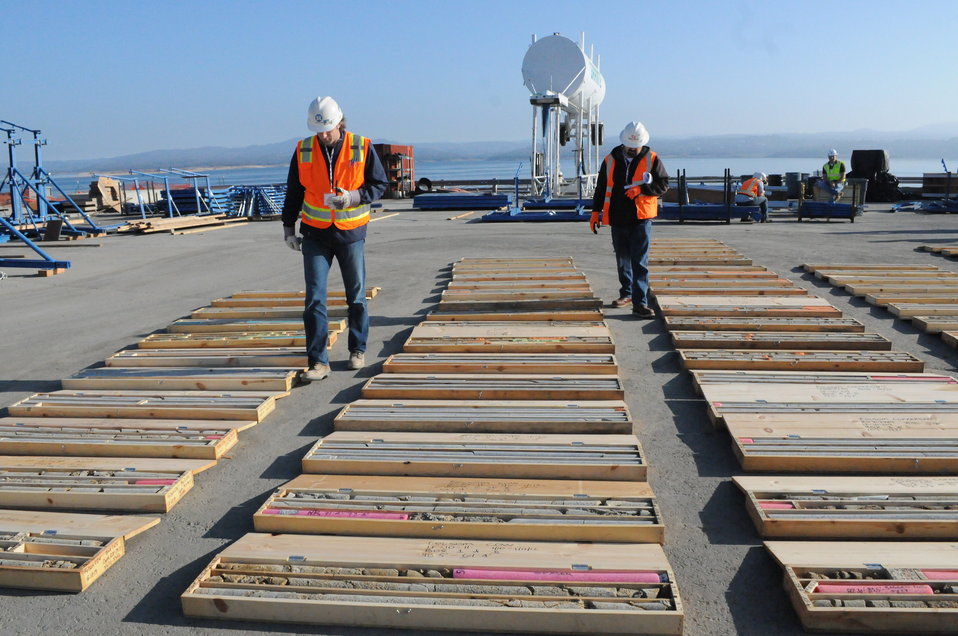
Phase IV Contractors Visit Construction Site

Construction contractors visited the Folsom Dam auxiliary spillway Feb. 3, 2013 to get a final walkthrough of the project before submitting their proposals to work on the fourth phase of the project. Potential contractors walked the site for hours comparing maps and schematics, and observing geological features and granite core samples. Proposals must be submitted before Feb. 25 and contracts are expected to be awarded sometime in May.